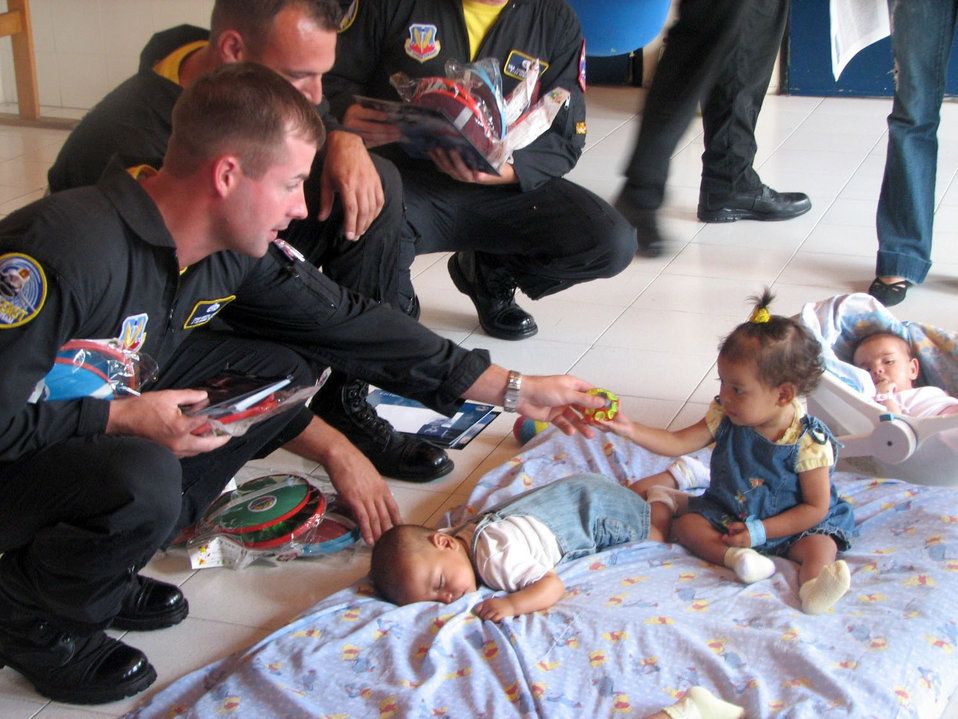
Spreading goodwill

Tech Sgt. Daryl Page and other members of the F-16 Fighting Falcon Viper East aerial demonstration team visit Clinica Infantil Santa Ana, a children's hospital in Medellin, Colombia, on Sunday, July 2. The team was in Colombia for the Rio Negro air show. Sergeant Page is an assistant team chief with the demonstration team.